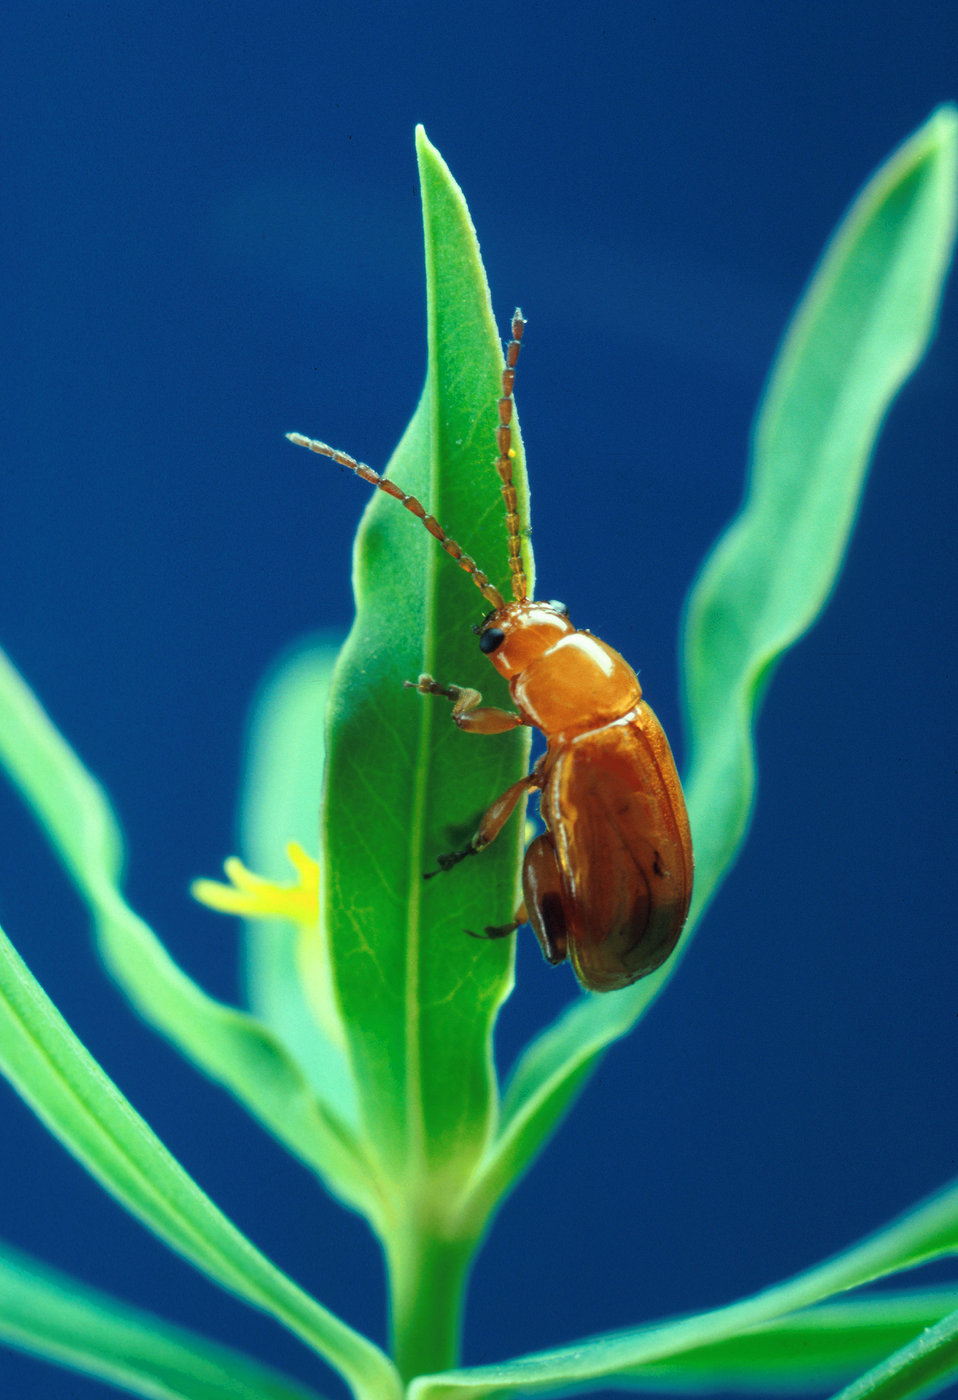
An Aphthona flava flea beetle feeds on leafy spurge.